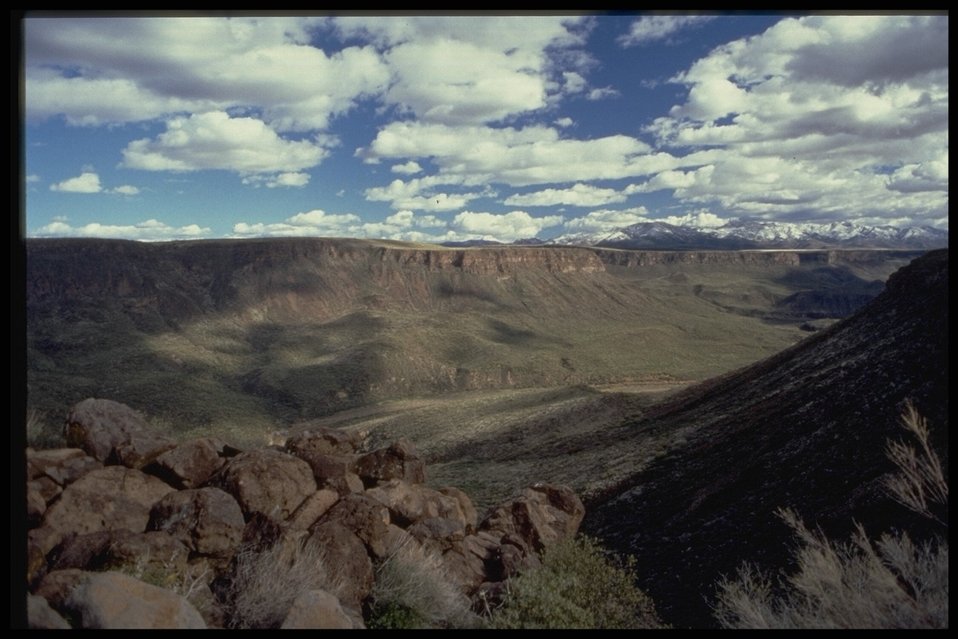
The Agua Fria Canyon below a cloud peppered Arizona sky.